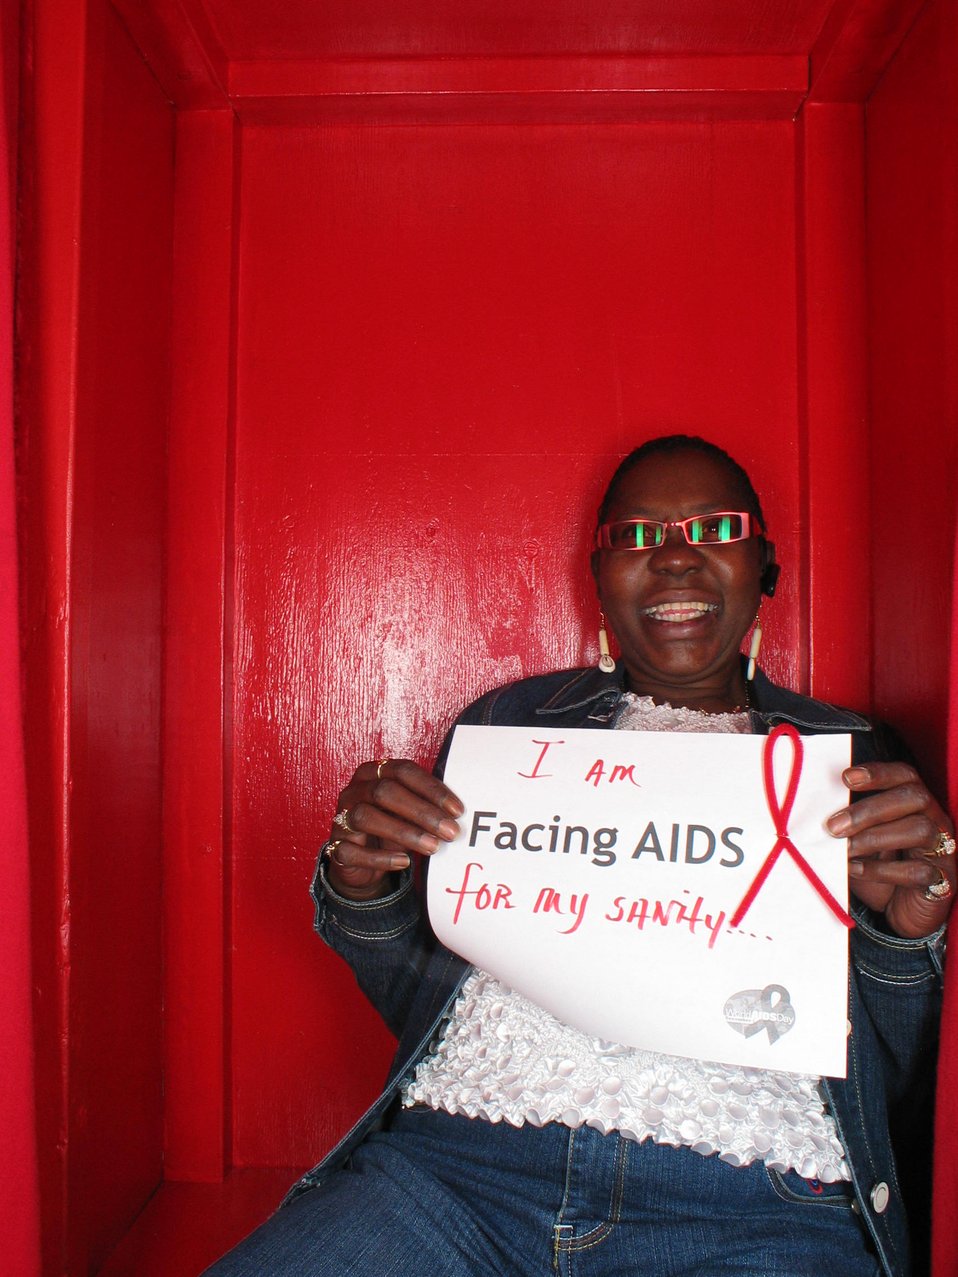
I am Facing AIDS for my sanity.